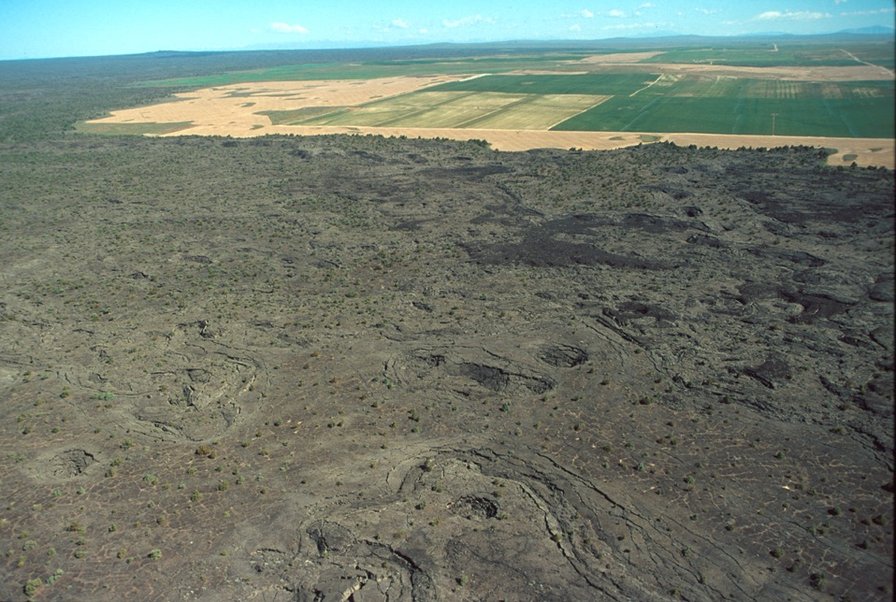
Shoshone Field Office USRD Upper Snake River District